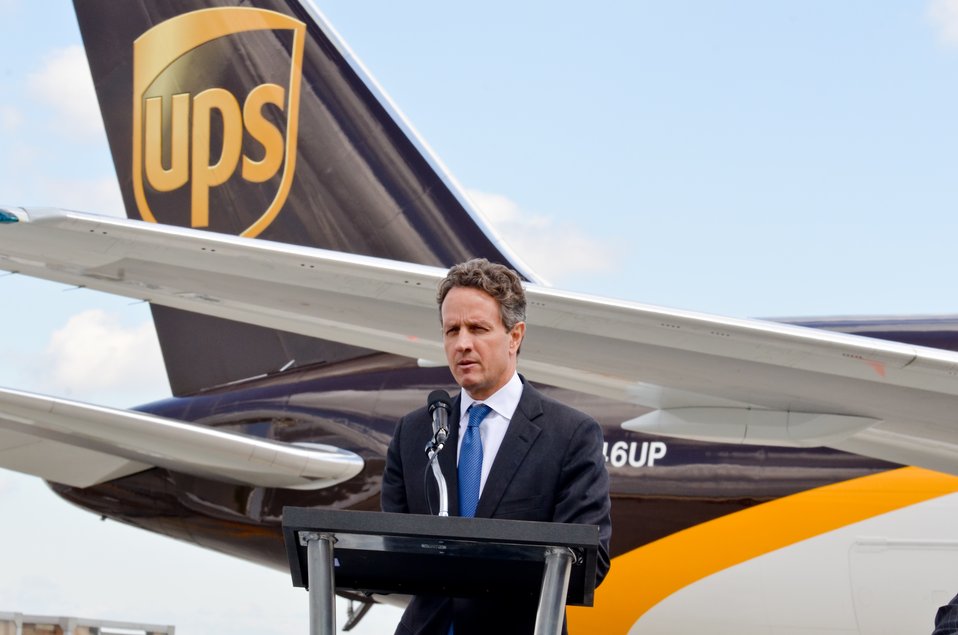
Secretary Geithner Visits UPS

After a tour of UPS and meeting with local business leaders to underscore the importance of investing in our nation’s infrastructure, Treasury Secretary Tim Geithner said, “If you do a better job of repairing roads and bridges, highways, airports, railways, it makes companies more competitive. It lowers their costs. It’s like a tax cut.”